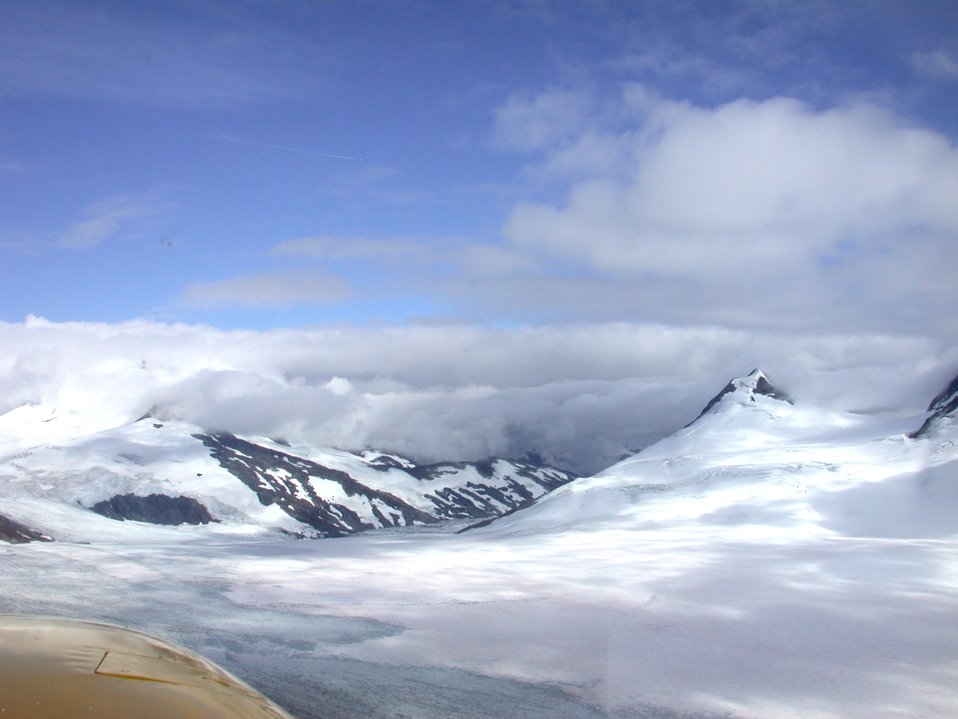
Float plane sightseeing along the Richardson Highway.